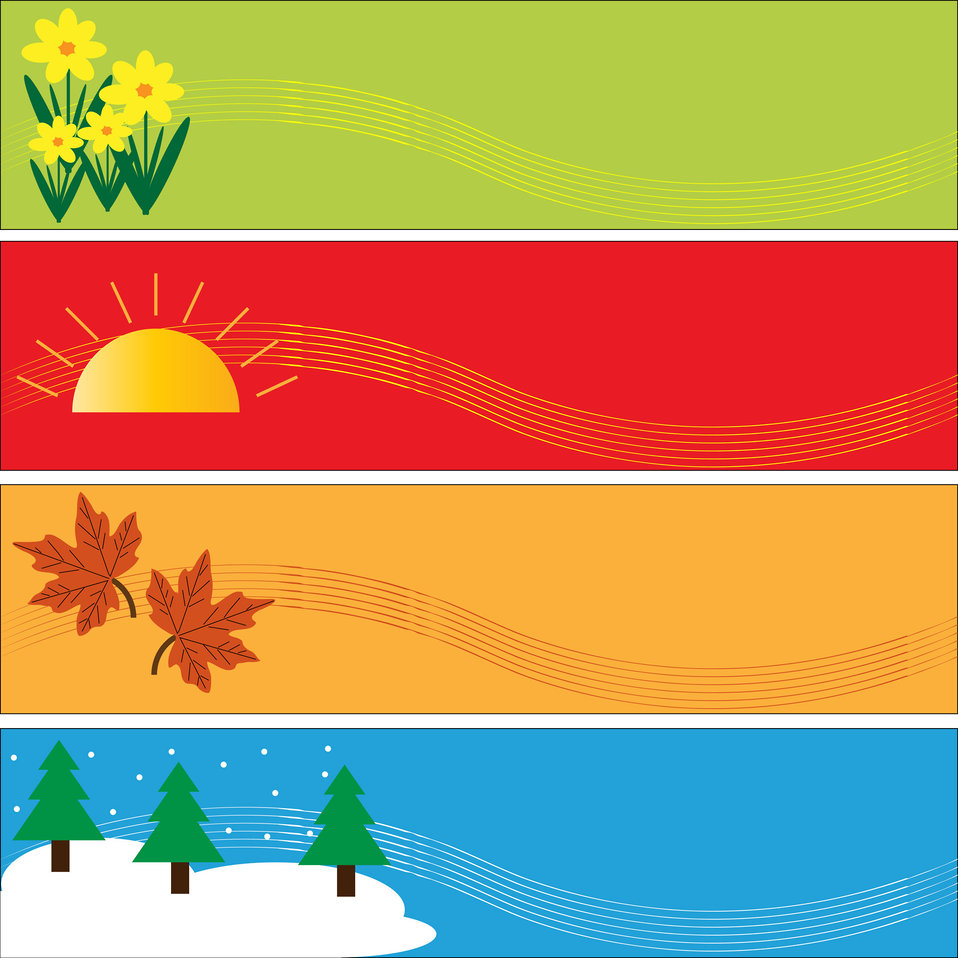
Seasonal banners

Colorful seasonal banners illustration.